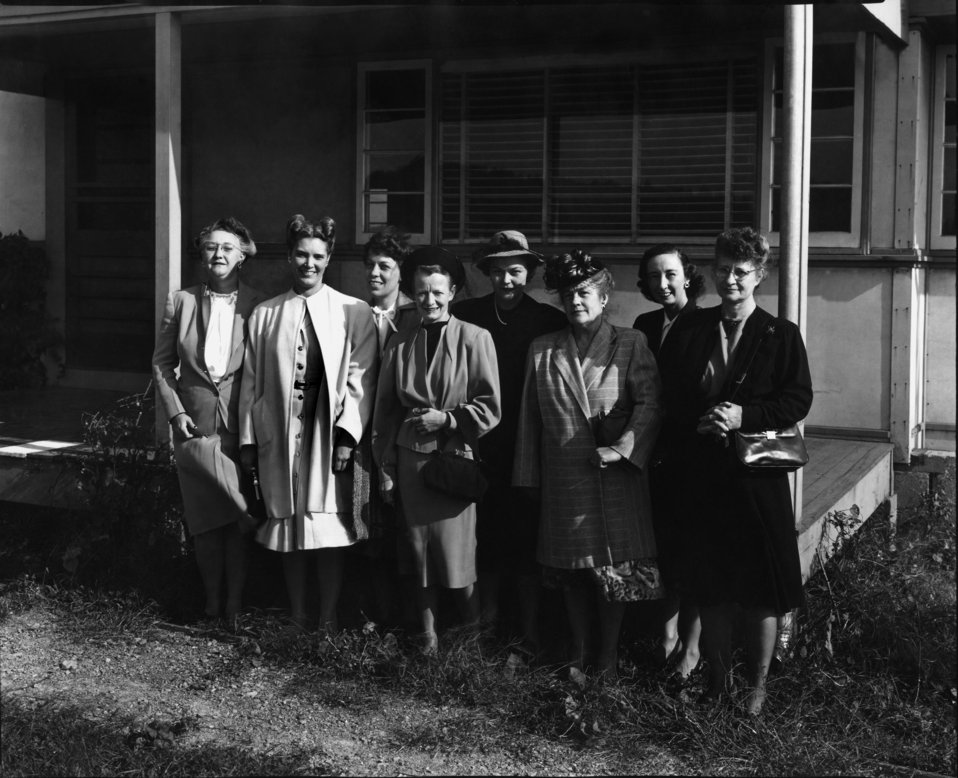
Group of Women Oak Ridge

S-149 DOE photo by Ed Westcott 1945 Oak Ridge Tennessee